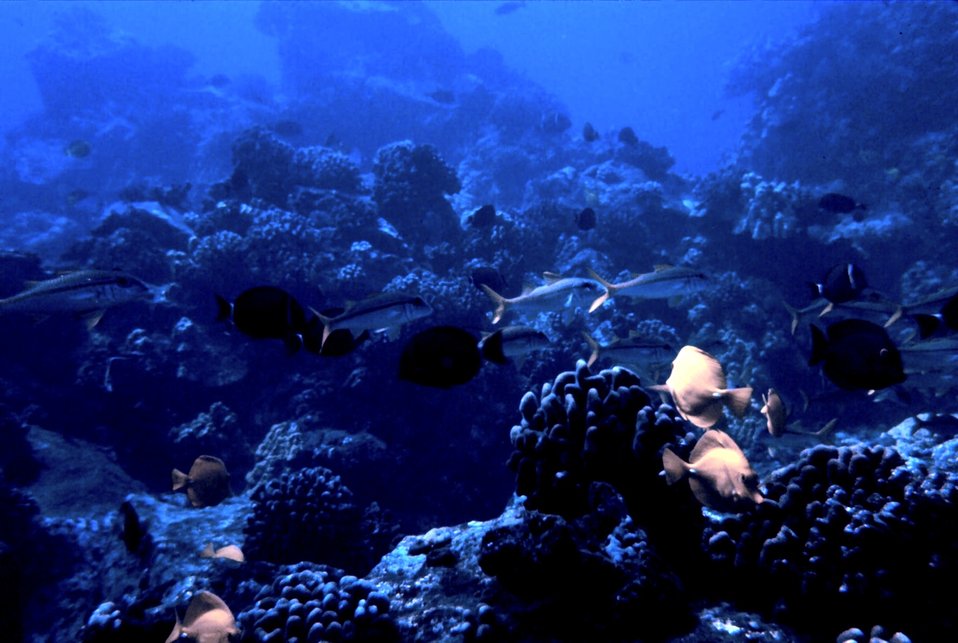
Zebrasoma flavescens - yellow tang. Ctenocheatus strigosus is large, black disc-shaped surgeon fish. Mulloidichthys samoensis -goat fish. Elongate fish with yellow tail. Acanthurus leucopareius - surgeon fish with white bands. A healthy reef ecosystem in the 1960's.